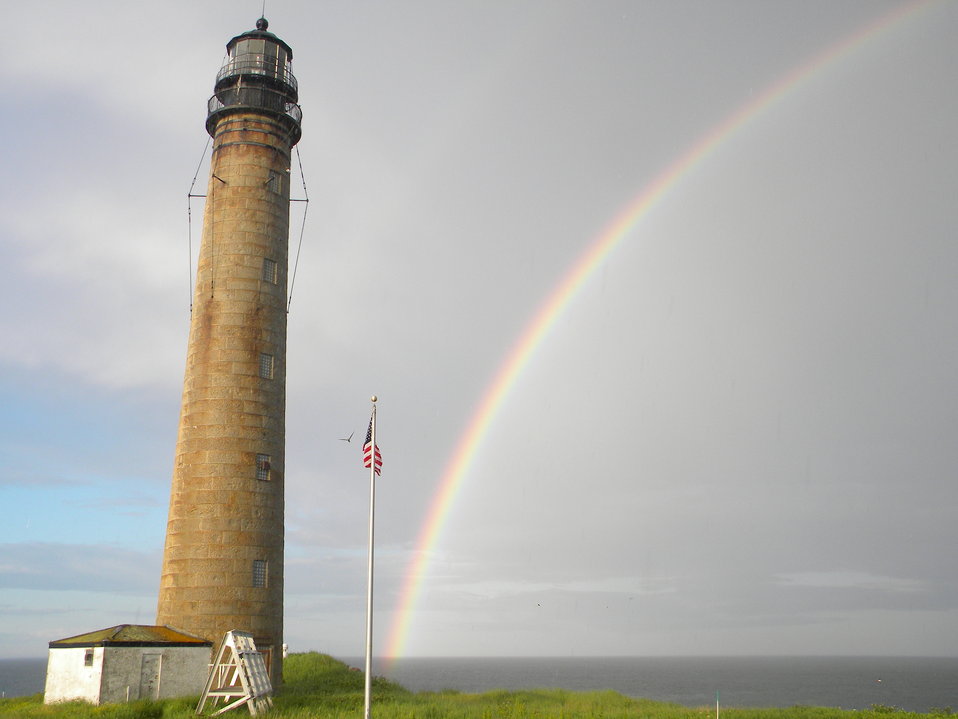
Photo of the Week - Rainbow at Maine Coastal Islands National Wildlife Refuge.

Photo of the Week - 08/10/2010

Petit Manan Island, Maine Coastal Islands National Wildlife Refuge.

Summer with the Seabirds blog: mainecoastalislands.wordpress.com/2010/08/01/terns/